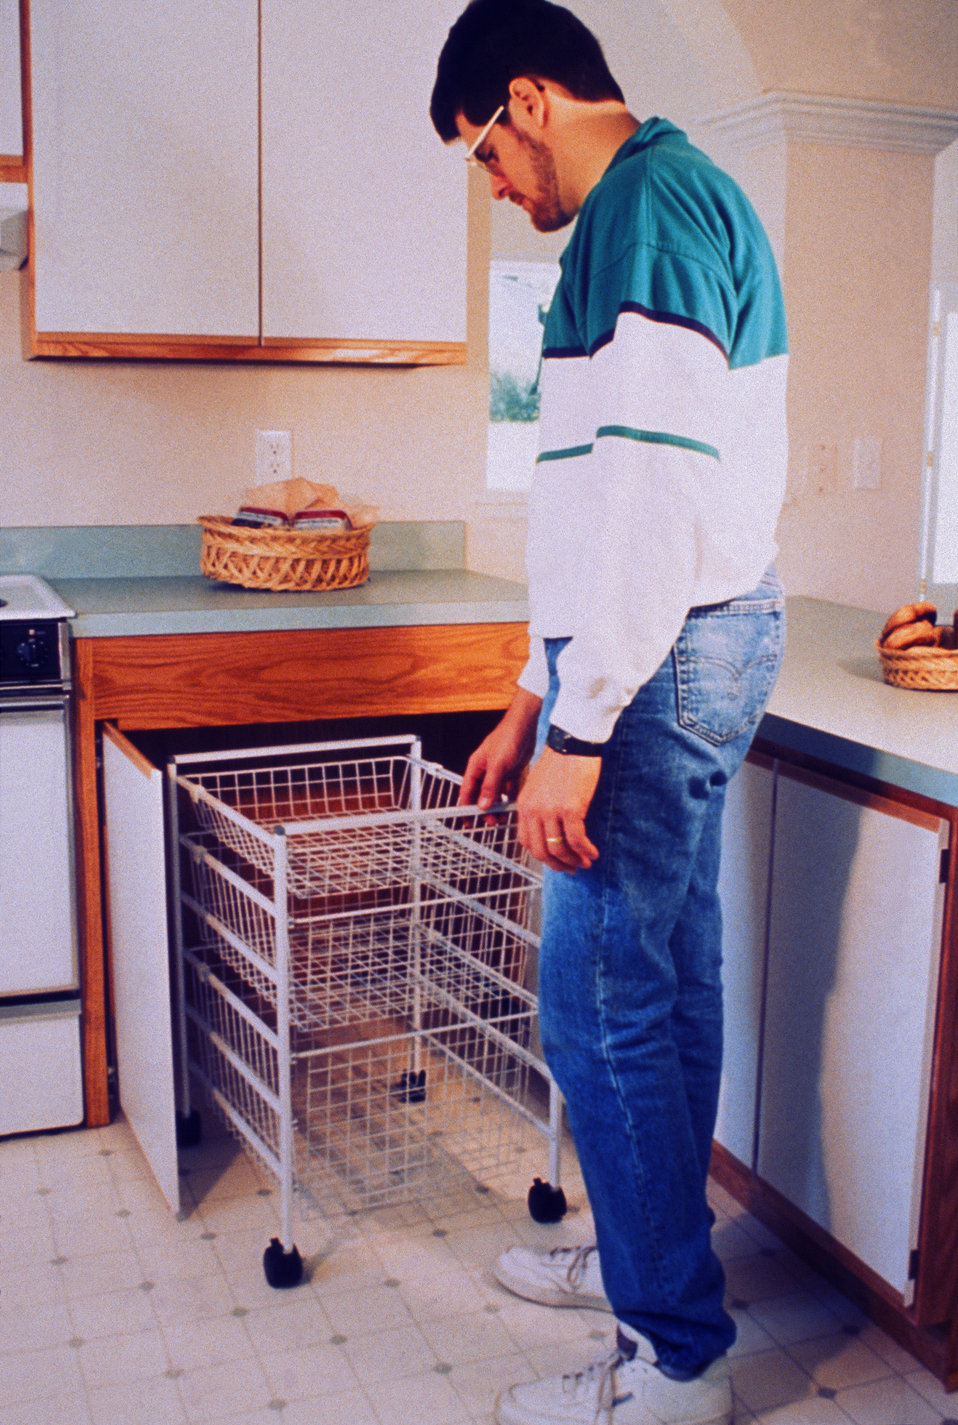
This 1994 image depicted a man inside a kitchen in which the cabenitry had been ergonomically-designed so as to accommodate the widest possible group of end users. These kitchen base cabinets easily converted into knee-spaces critical for people using wheelchairs, as well as those with stamina or balance limitations, who had to sit while completing extended food-preparation activities. The cabinet design included retractable doors that could be slid underneath the counter, and rolling cart storage that could be removed, thereby, opening up the knee-spaces, which accommodated wheelchair users quite comfortably. Note that the adaptable cabinet had been located in a place that would assist with both the use of the range, and facilitate in reaching wall cabinets above.